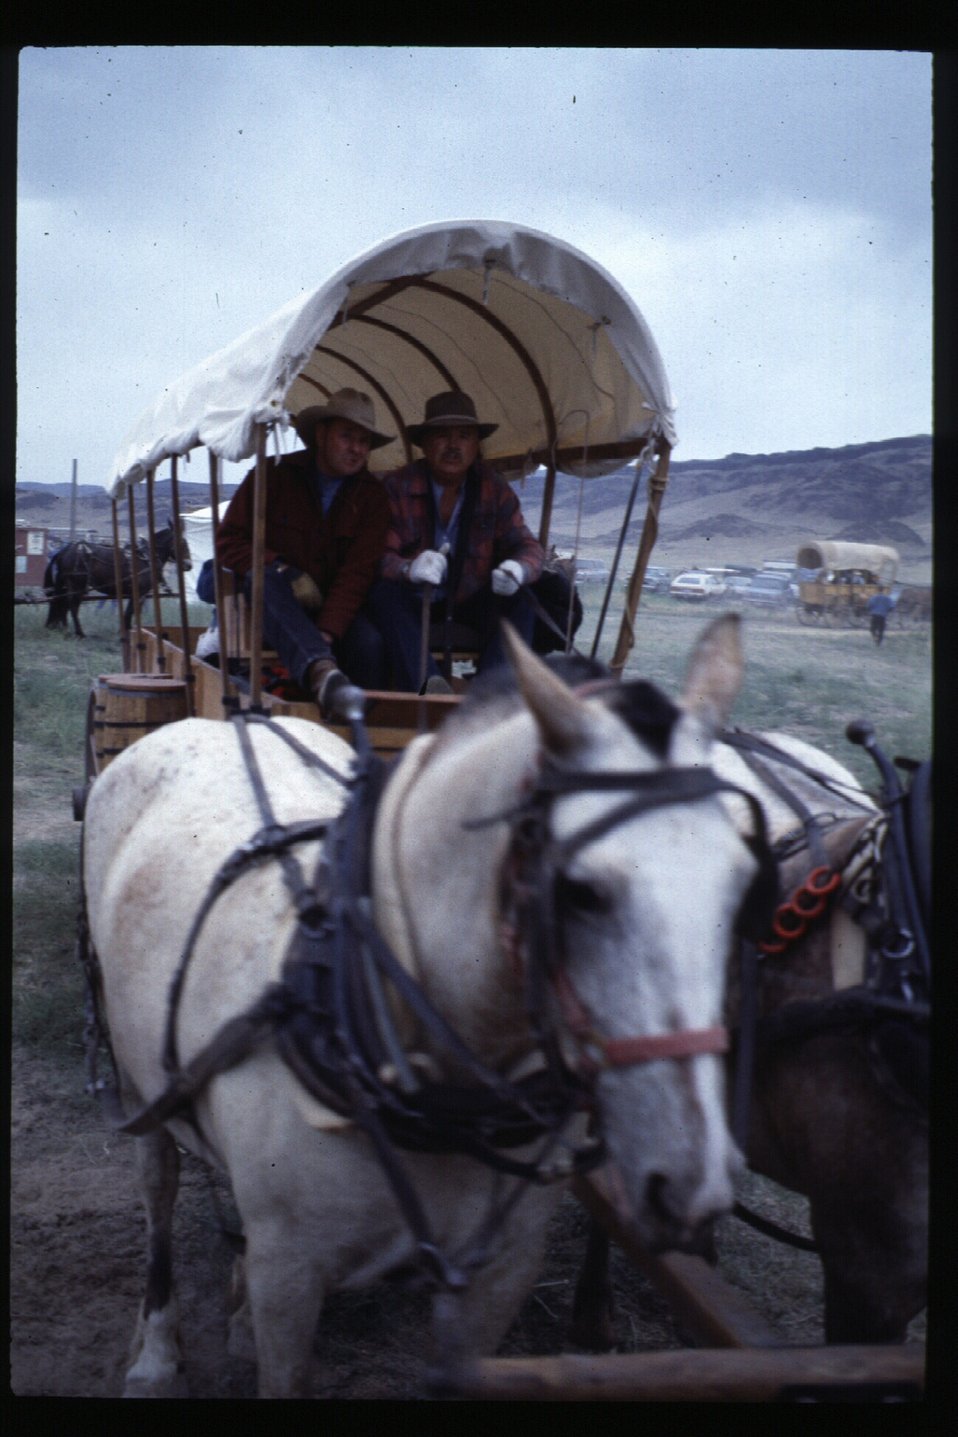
Wagon Train Oregon Trail Reenactment Four Rivers Field Office LSRD Lower Snake River District